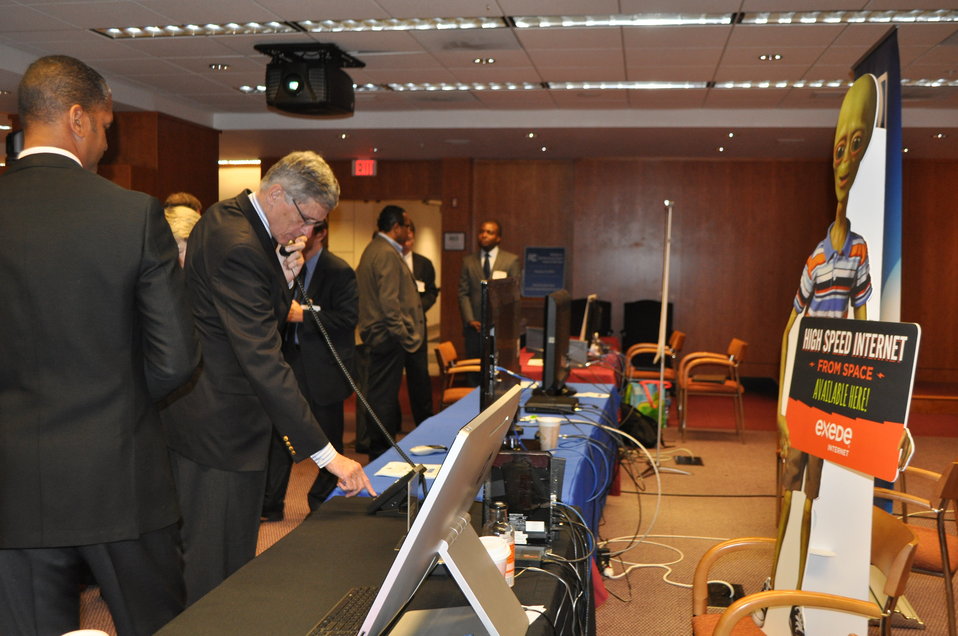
5.14.2014 Satellite Technology Demonstration

Chairman Tom Wheeler at the Satellite Technology Demonstration